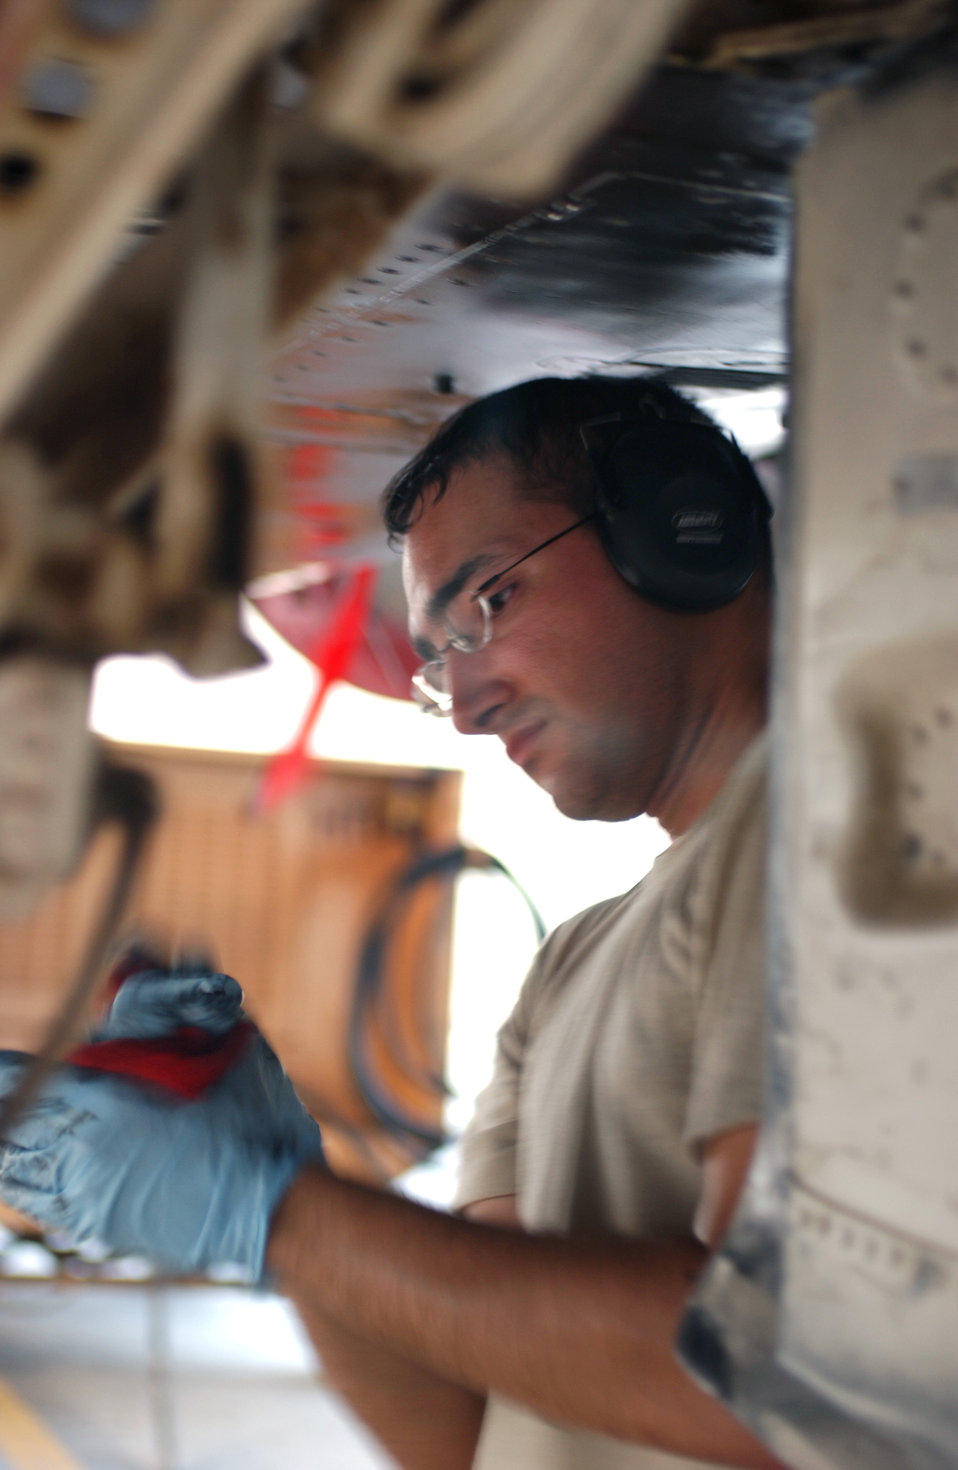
Iraqi/Enduring Freedom

Senior Airman Seth Rodriguez hooks a hydraulic mule to perform a nose landing gear functional check at a forward operating base in Southwest Asia on Aug. 13. Airman Rodriguez is a repair and reclamation technician assigned to the 335th Aircraft Maintenance Unit. He is deployed from Seymour Johnson Air Force Base, N.C.